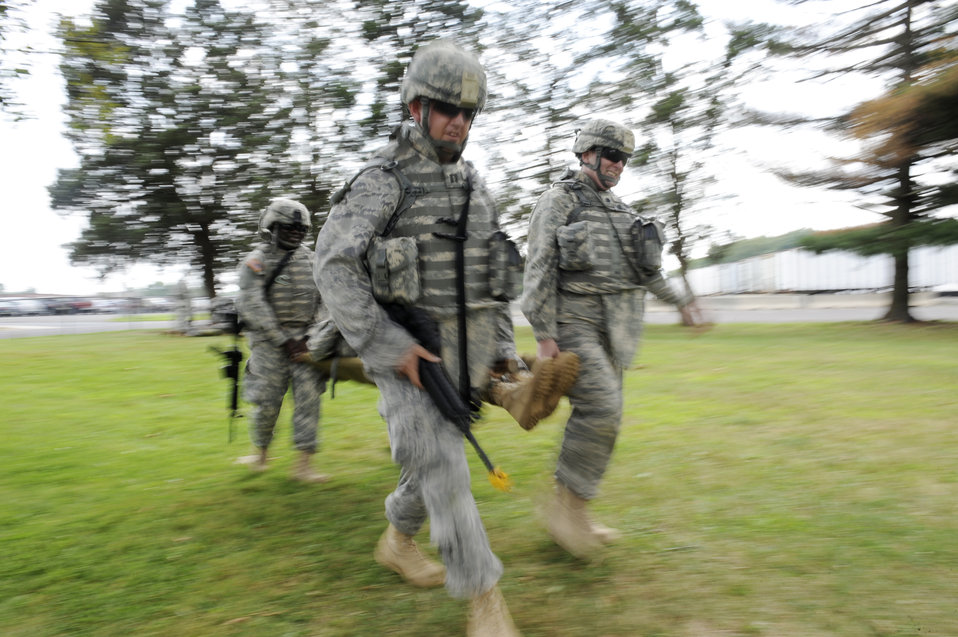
Airmen prepare for deployment

Soldiers, Sailors and Airmen carry out a